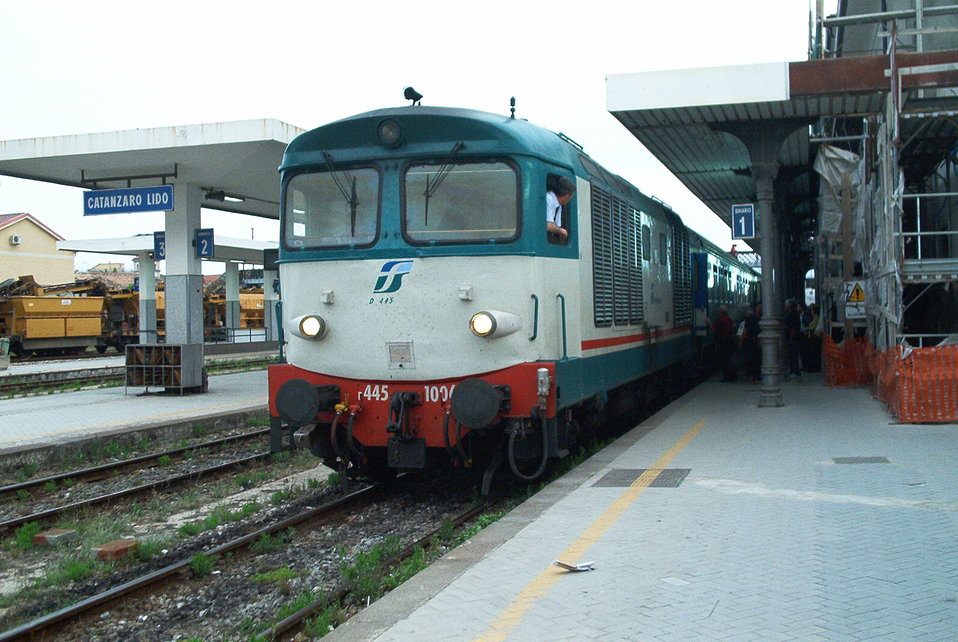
Italiano: Foto della loco diesel D445 1006 nella stazione di Catanzaro Lido al traino dell'Intercity notte ICN750 'Piepoli' proveniente da Melito di Porto Salvo per Lamezia T.C.-Milano Cle.(I Serie riverniciata XMPR 2, Agosto 2005)